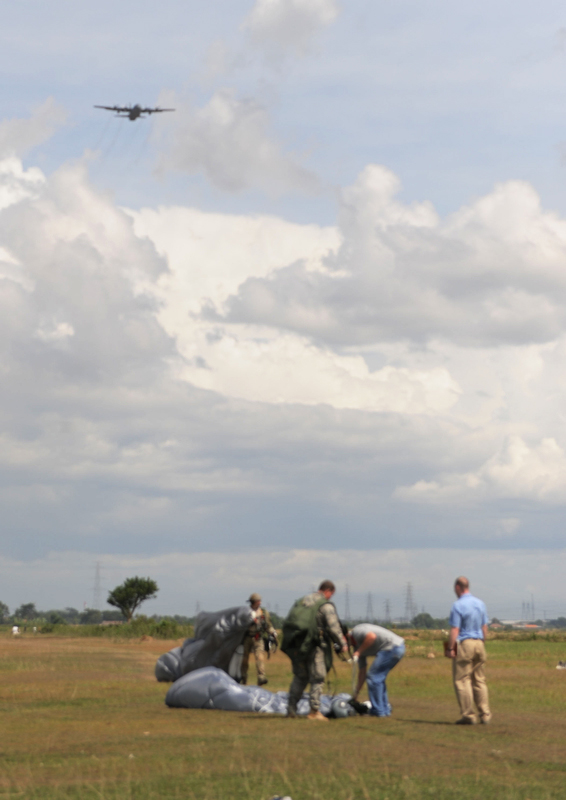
U.S., Indonesian airmen jump into training

Air Force jumpmasters gather their parachutes after conducting high-altitude, low-opening jumps over the Gorda drop zone during Exercise Cope West 2010 April 21, 2010, in Indonesia.